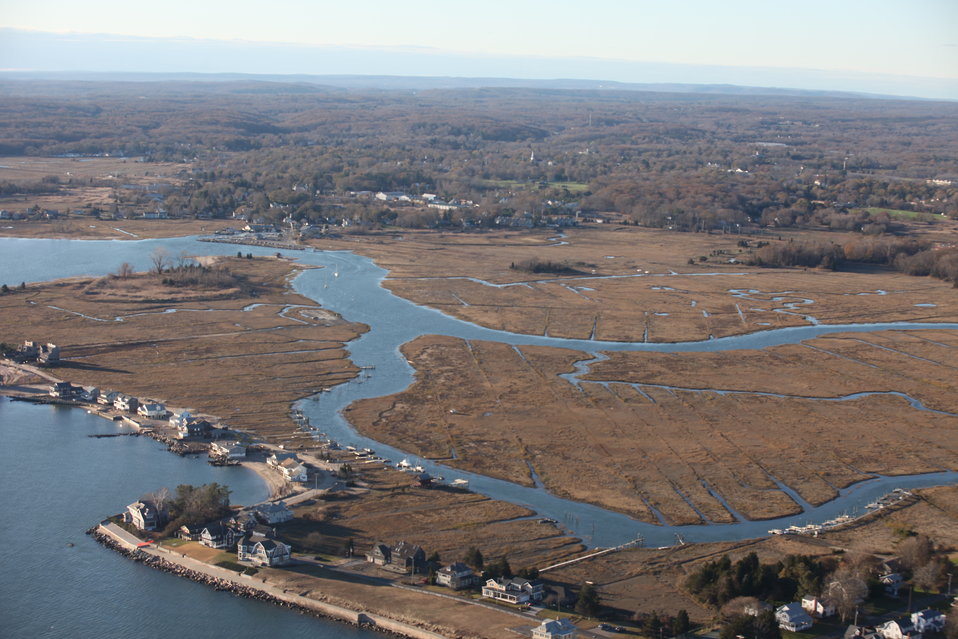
Stewart B. McKinney National Wildlife Refuge-Guilford Wetlands (CT)

Aerial view of Guilford Wetlands an area that the U.S. Fish and Wildlife Service is involved in a conservation effort near the refuge.